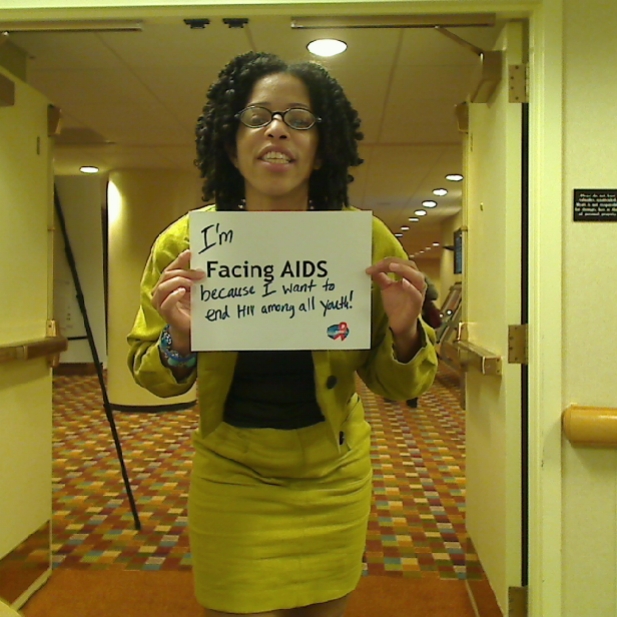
I'm Facing AIDS because I want to end HIV among all youth!